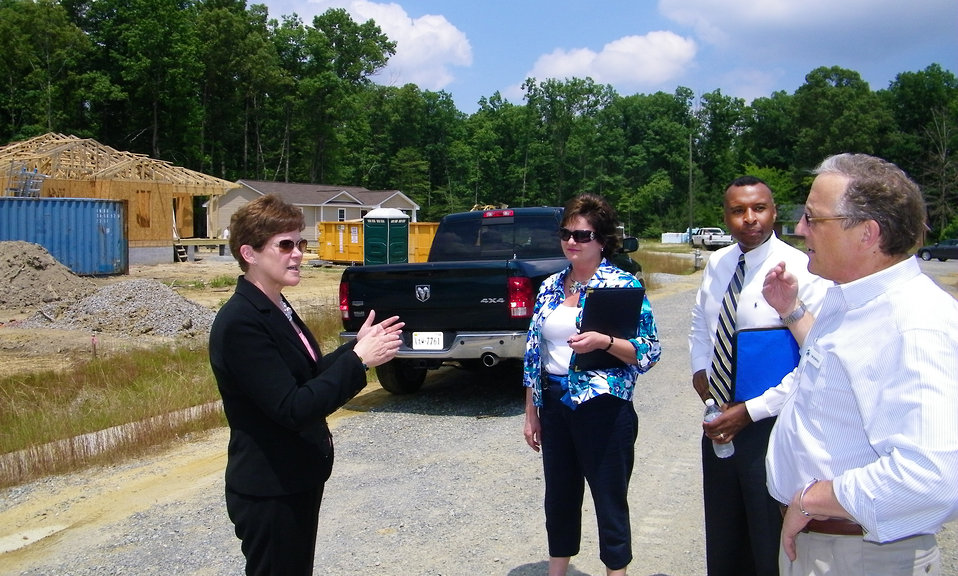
Agriculture Deputy Secretary Krysta Harden tours a Habitat for Humanity project in Ashland, VA as part of Homeownership Month on Wednesday, Jun. 11, 2014. (L to R Agriculture Deputy Secretary Krysta Harden, U.S. Department of Agriculture (USDA) Rural Development (RD) Virginia Director for housing Programs Anne Herring, USDA RD Virginia State Director Dr. Basil Gooden and Executive Director for Hanover Habitat For Humanity Tim Bowring).